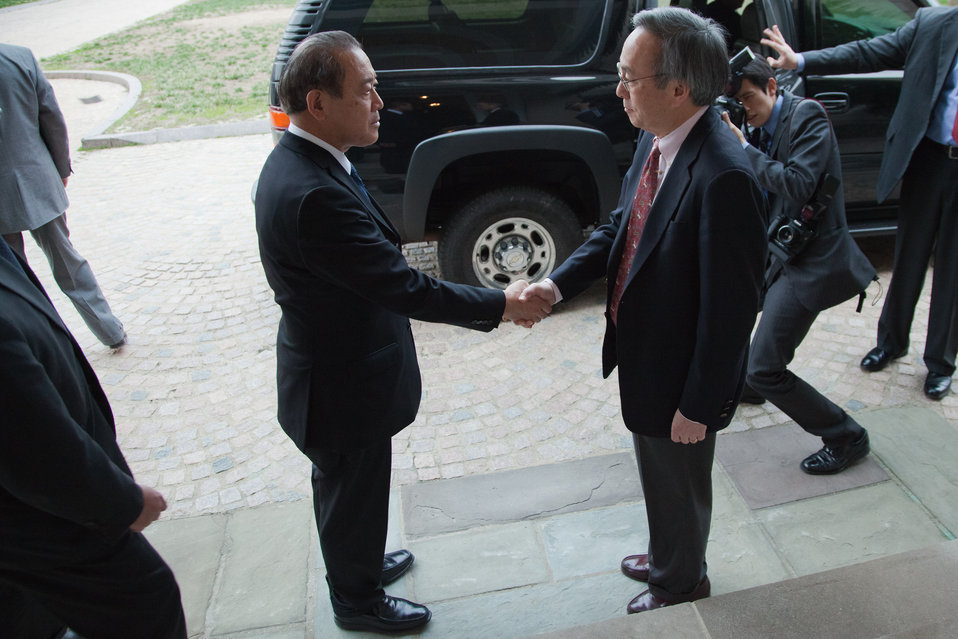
Sec. Chu visits Japanese Embassy 9 of 8

Sec. Steven Chu meets with Japanese Ambassador to the United States, Ichiro Fujisaki.